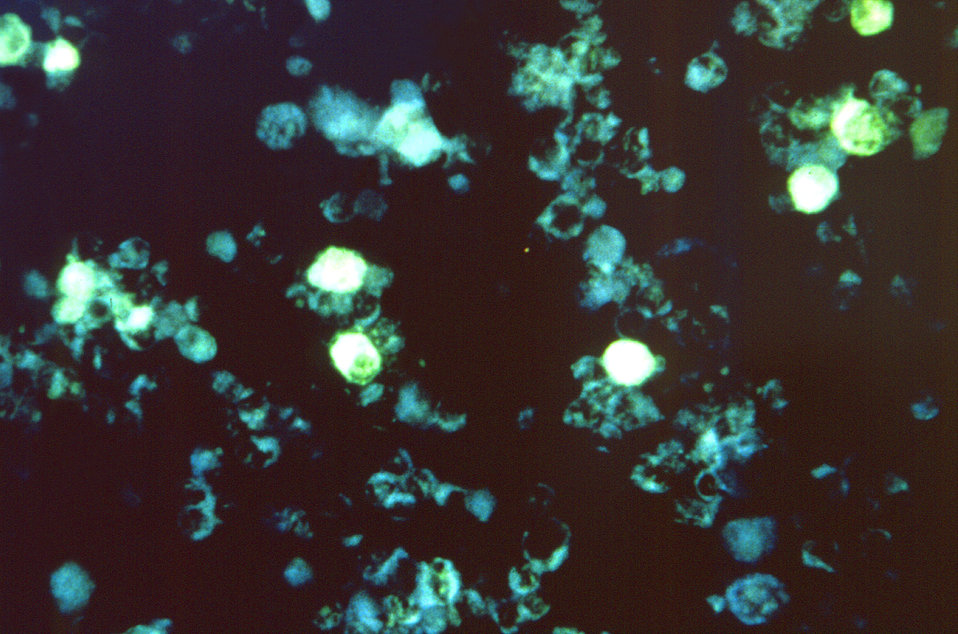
Using the fluorescent antibody (FA) staining technique, this photomicrograph revealed the cumulative effect of the Epstein-Barr virus on cells of unknown origin.